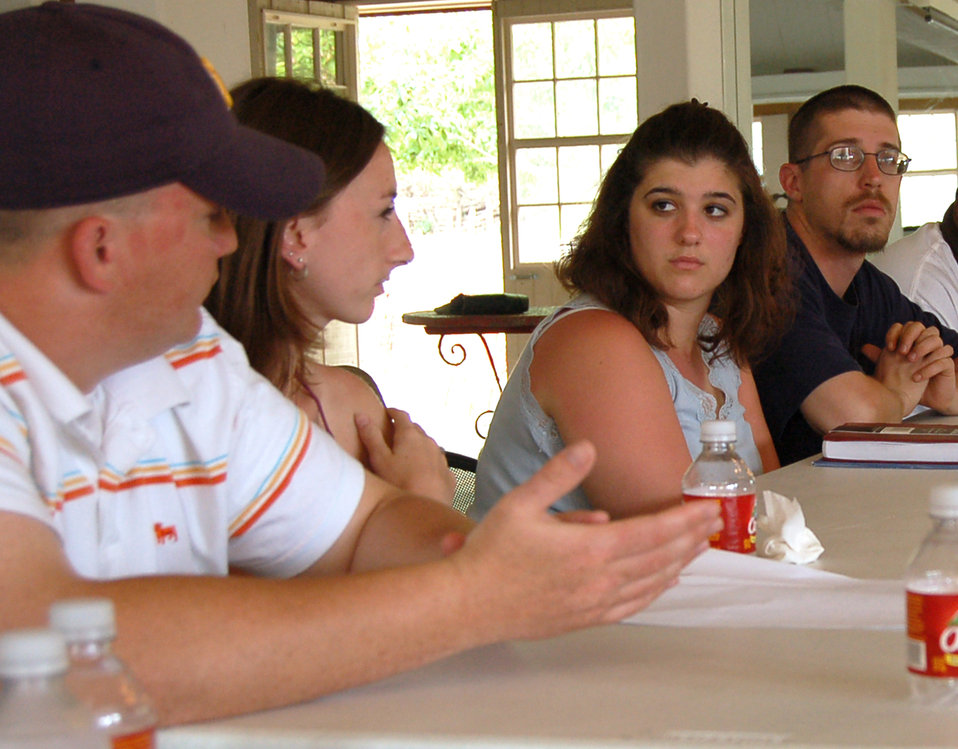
Retreat reconnects couples

(Left to right) Senior Airman Aaron Childs and his wife, Mellissa, talk with Army Sgt. Jenifer Behlke and her husband, Army Sgt. Jon Behlke, during a retreat in Hunt, Texas, on Sunday, April 23, 2006. Group discussions on family separation were part of the activities at the retreat hosted by the Military, Veteran and Family Assistance Foundation at the Heart of the Hills Camp. The retreat helps couples reconnect after the military spouse returns from a deployment.